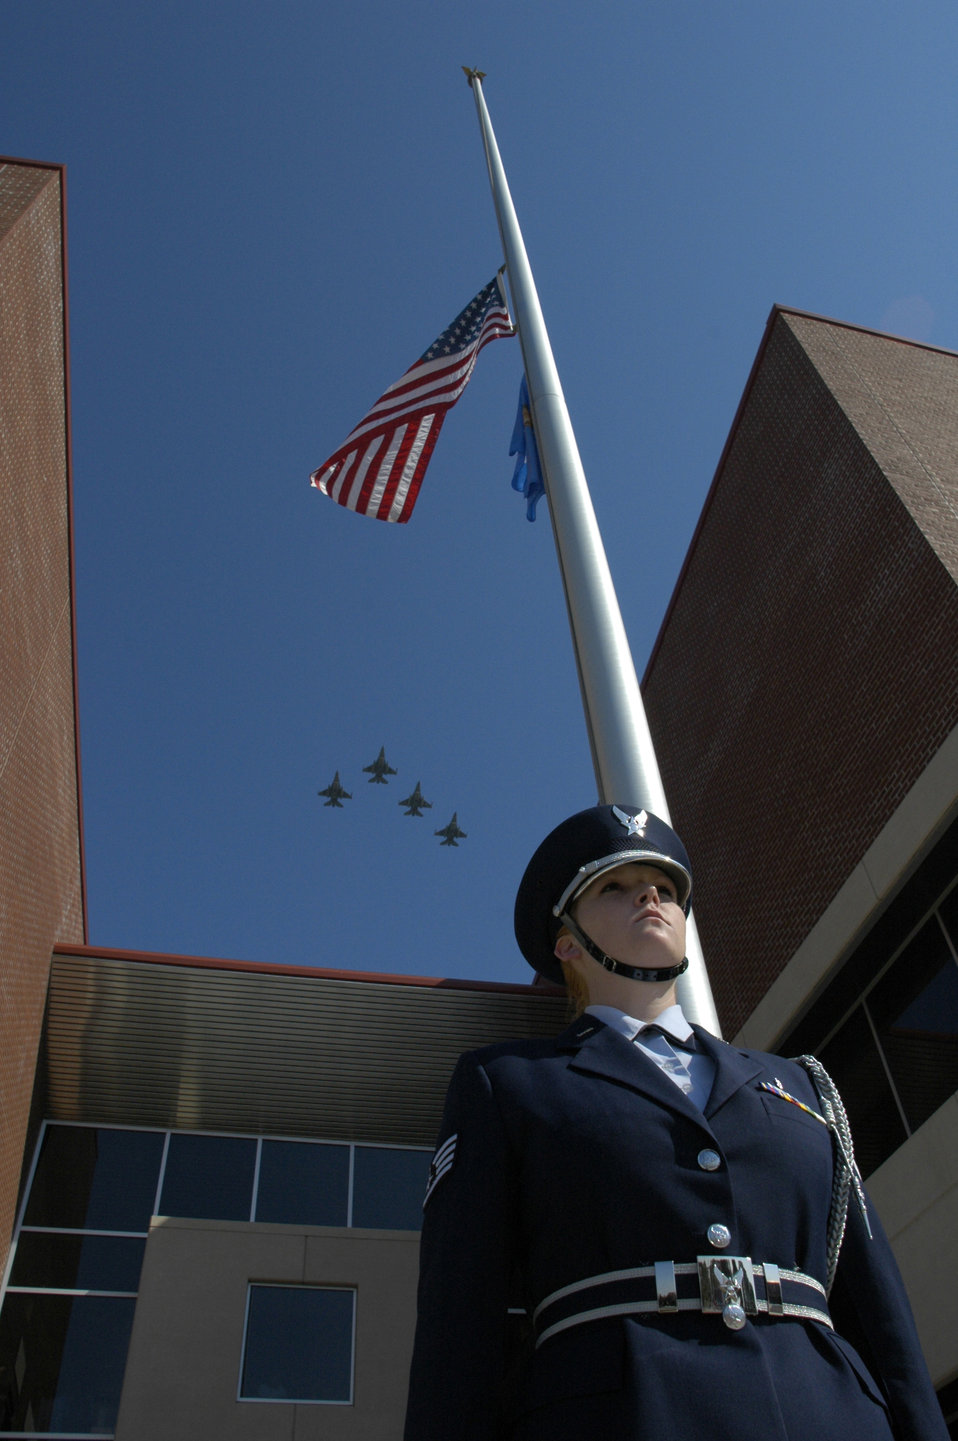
September 11

TULSA AIR NATIONAL GUARD BASE, Okla. -- Staff Sgt. Tarah Bjaaland stands at attention as F-16 Fighting Falcons perform a flyby during 9-11 commemoration ceremony here Sept. 11. Sergeant Bjaaland is assigned to the Tulsa Air National Guard's 138th Fighter Wing.